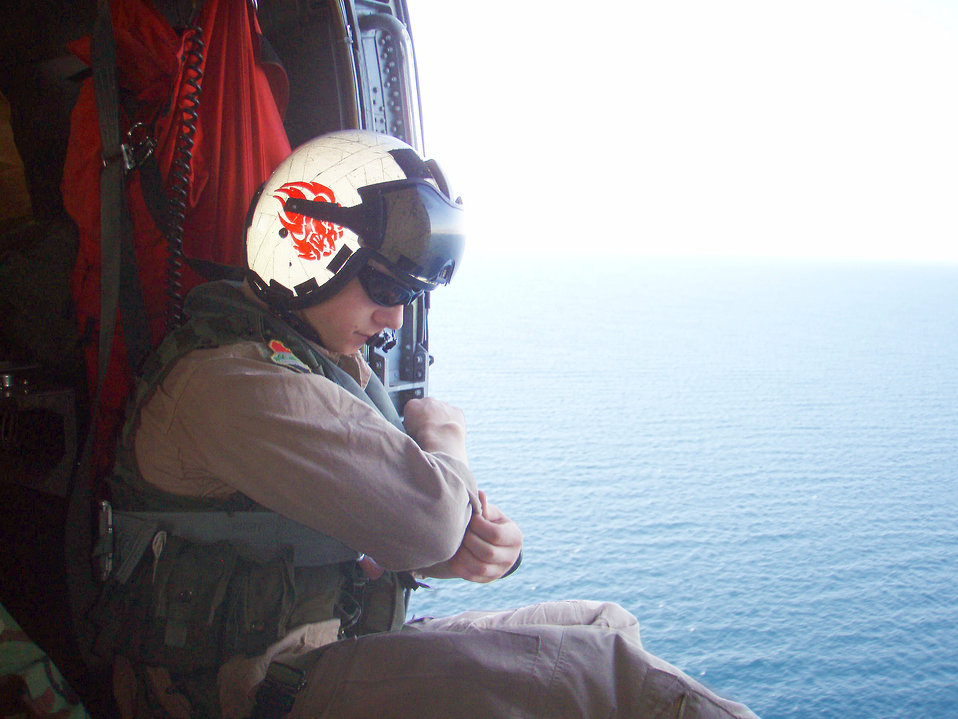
Photographed by U.S. Public Health Service (USPHS) Lt. Cmdr. Gary Brunette this image depicted a helicopter crewmember onboard the transport carrying Cmdr. Brunette and his fellow USPHS corpsmen from the Nimitz class supercarrier, USS Carl Vinson (CVN-70) out to the aircraft carrier, USS Bataan, during Caribbean Operation Unified Response.